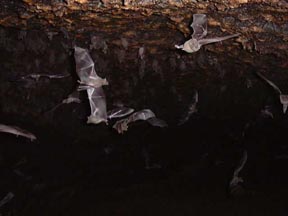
Bat, lesser long-nosed (A0AD).